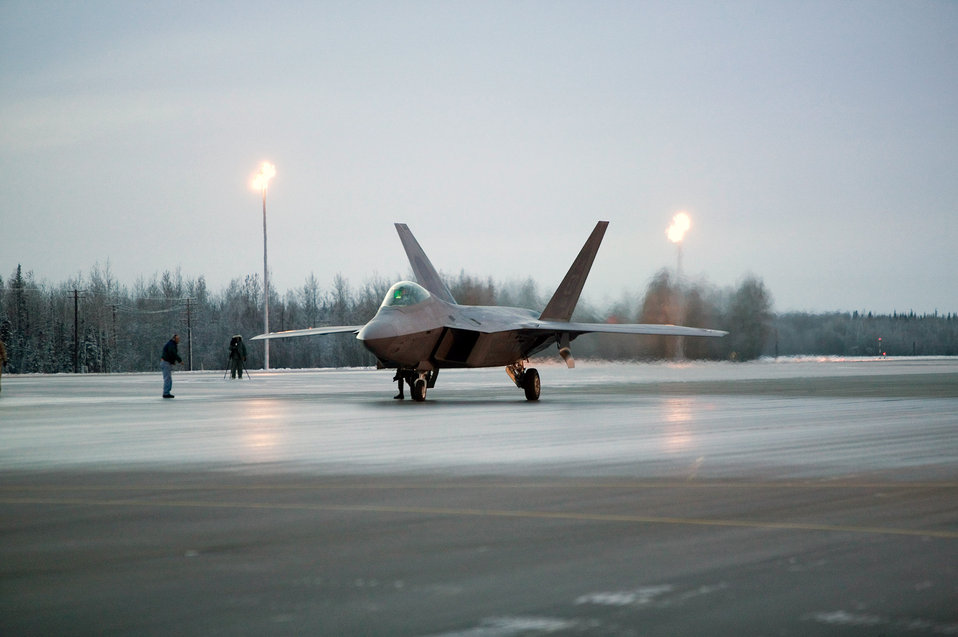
F-22 endures 3-week, cold-weather test at Eielson

An F-22 Raptor performs manuevering, stopping and going on low runway conditions Nov. 7 at Eielson Air Force Base, Alaska. The F-22 underwent cold-weather testing on its braking system, with emphasis on its ability to maneuver, stop and go on slippery surfaces. The aircraft was tested by the 411th Flight Test Squadron during a three-week deployment on incrementally low-level runway condition reading surfaces, with temperatures ranging between 37 to -13 degrees. The F-22 is from Edwards AFB, Calif.